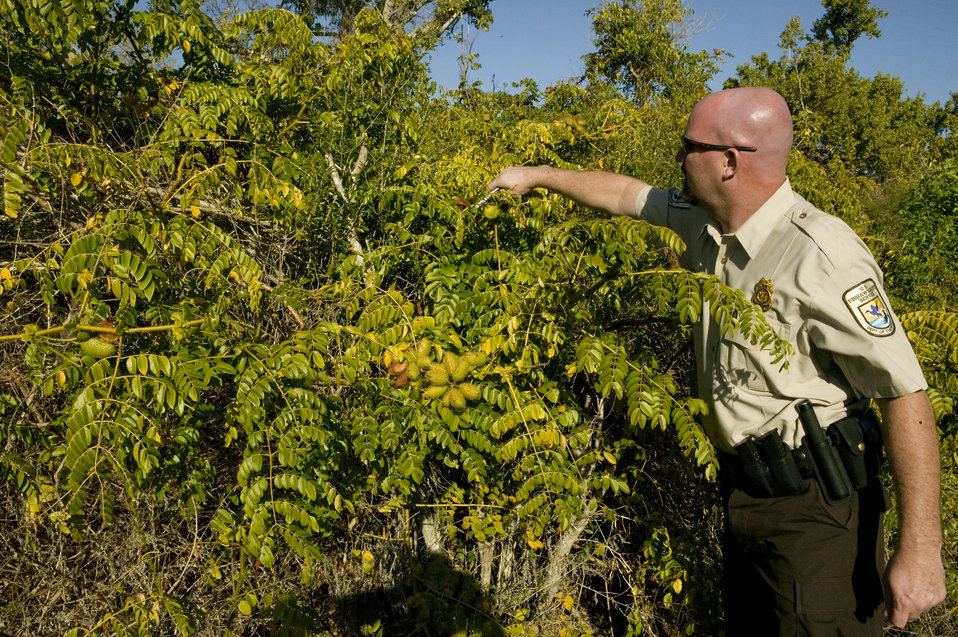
nicker bean

A U.S. Fish and Wildlife Service employee inspects Nicker Bean plant, a native invasive species on J.N. Ding Darling National Wildlife Refuge in Florida.